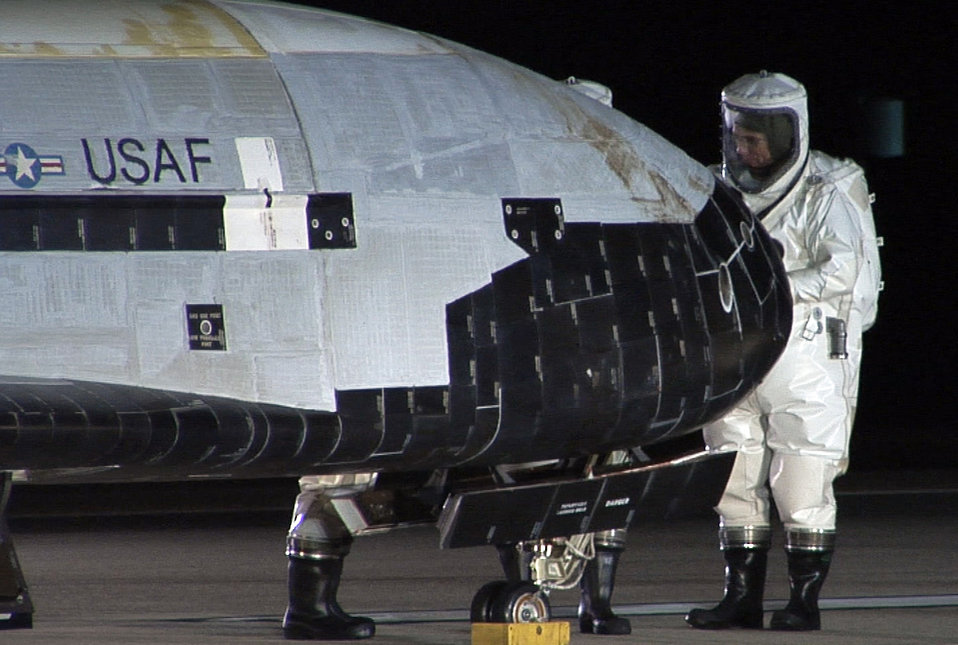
X-37B

The X-37B Orbital Test Vehicle sits on the runway at Vandenberg Air Force Base, Calif., Dec. 3, 2010, during post-landing operations. Personnel in self-contained atmospheric protective ensemble suits are conducting initial checks on the vehicle and ensuring the area is safe. The X-37B launched April 22 from Cape Canaveral, Fla., allowing teams to conduct on-orbit experiments for more than 220 days during this first mission.